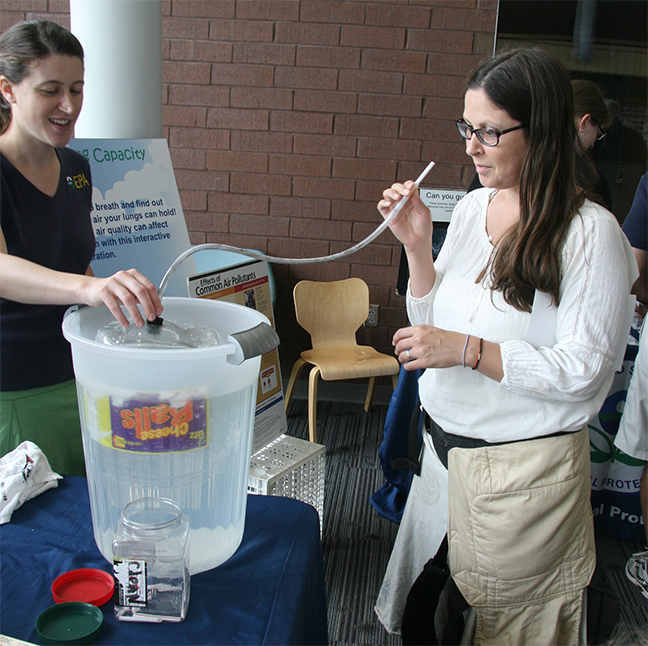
June, 2013 - Testing how much air capacity your lungs have!

A visitor plays the Lung Capacity game where you see how much air your lungs hold by blowing into and displacing water.